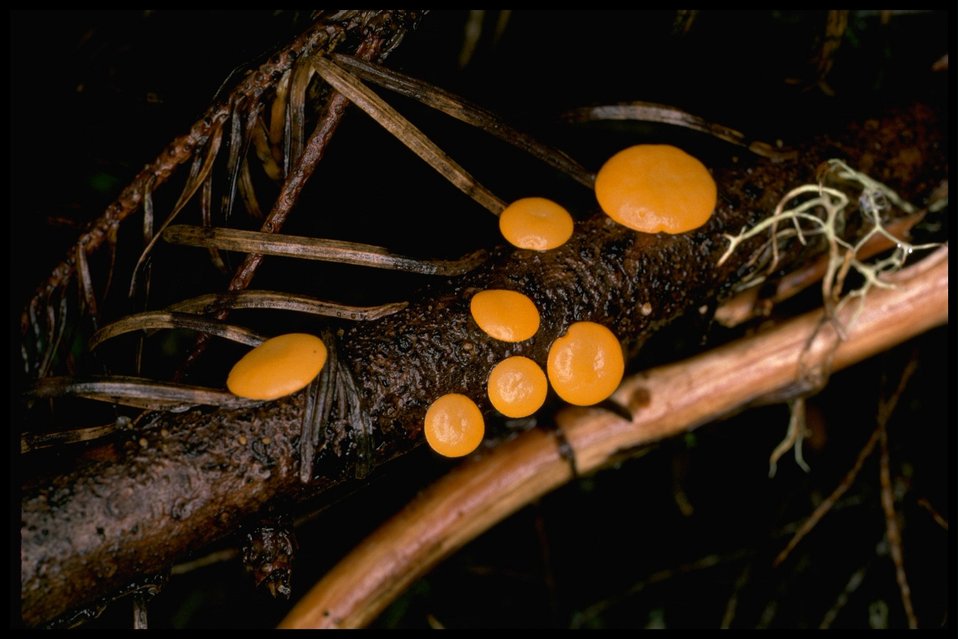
Medium shot of pythia (Pithya vulgaris).